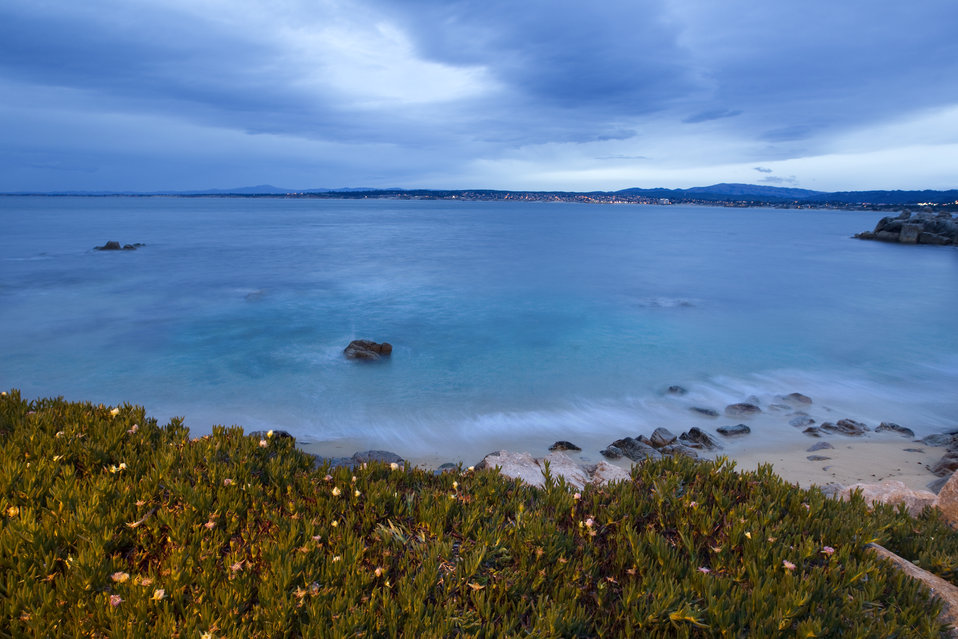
Monterey Bay Coast